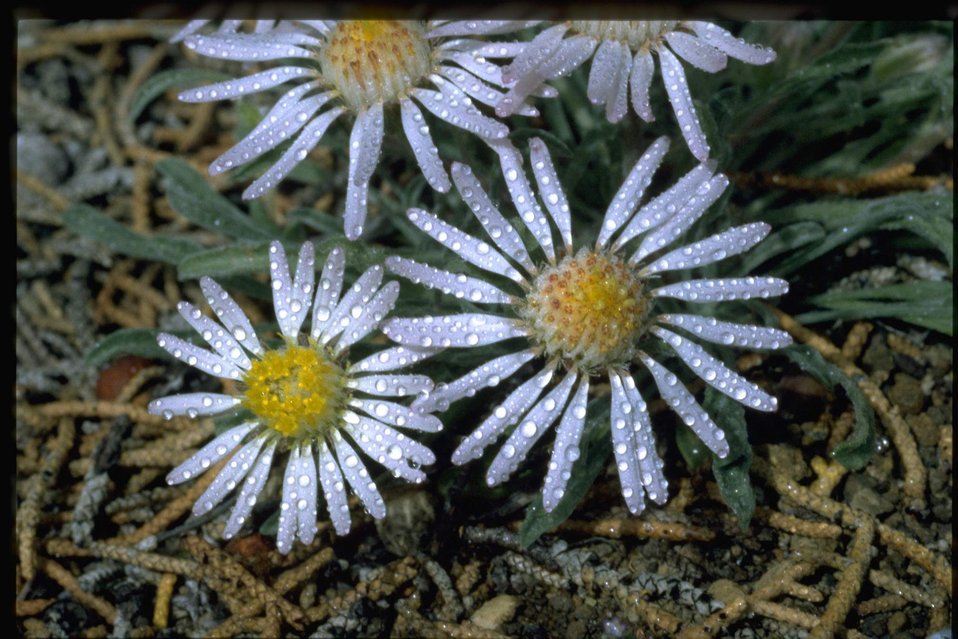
Medium shot of thread-leafed daisies.